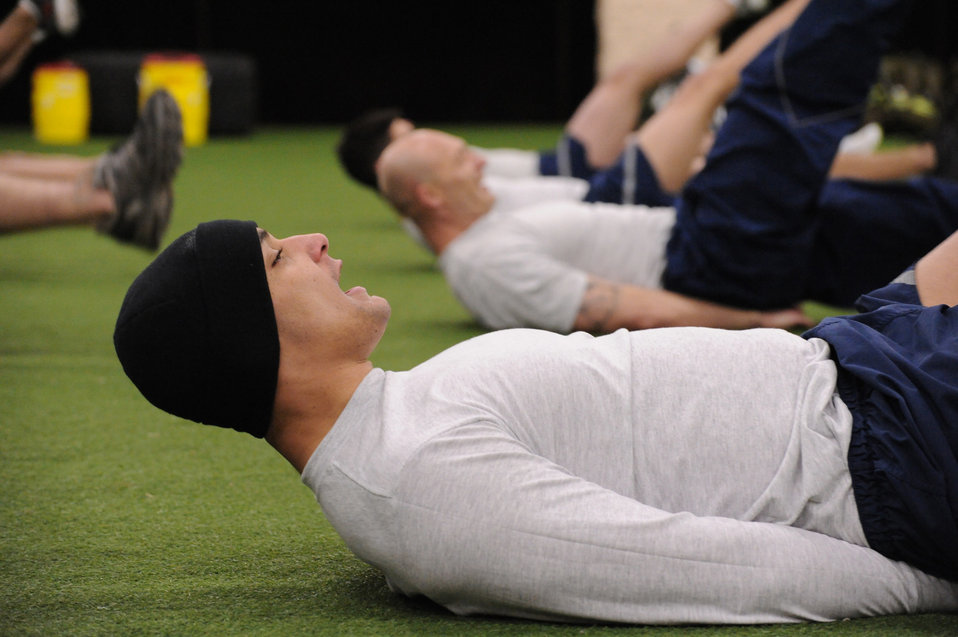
Combat control candidates vie for shot at scarlet beret

Senior Airman Eli Terry completes flutter kicks Feb. 8, 2011, on Hurlburt Field, Fla. Airman Terry is assigned to the 5th Force Support Squadron at Minot Air Force Base, N.D. He is a cross-training candidate for the combat controller career field.